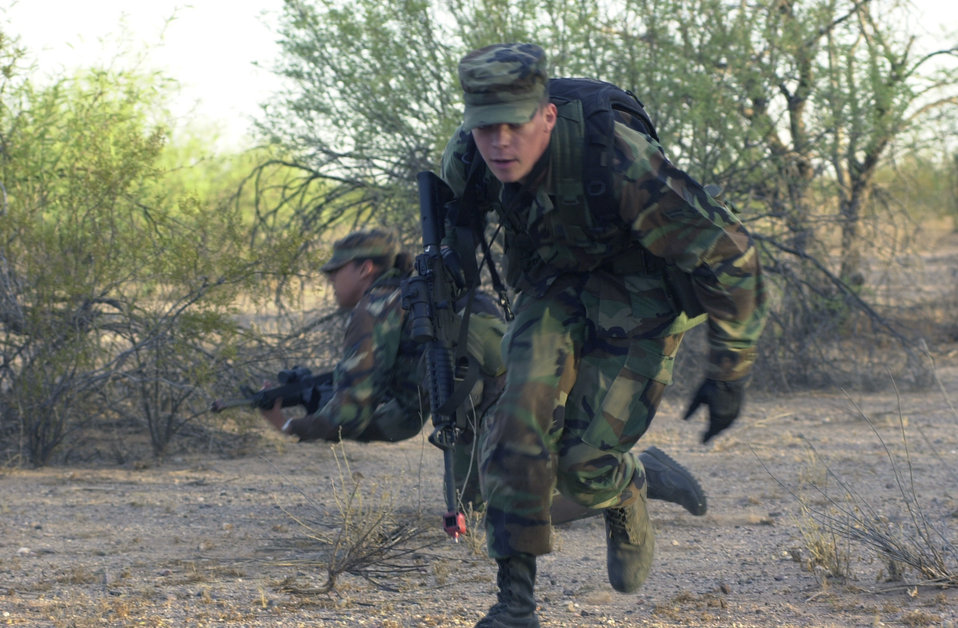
Take cover!

LUKE AIR FORCE BASE, Ariz. - Airmen Christopher Wright and Jeannie Hill, take cover from a simulated attack during compass navigation training here recently. Both Airmen are assigned to the 56th Security Forces Squadron.